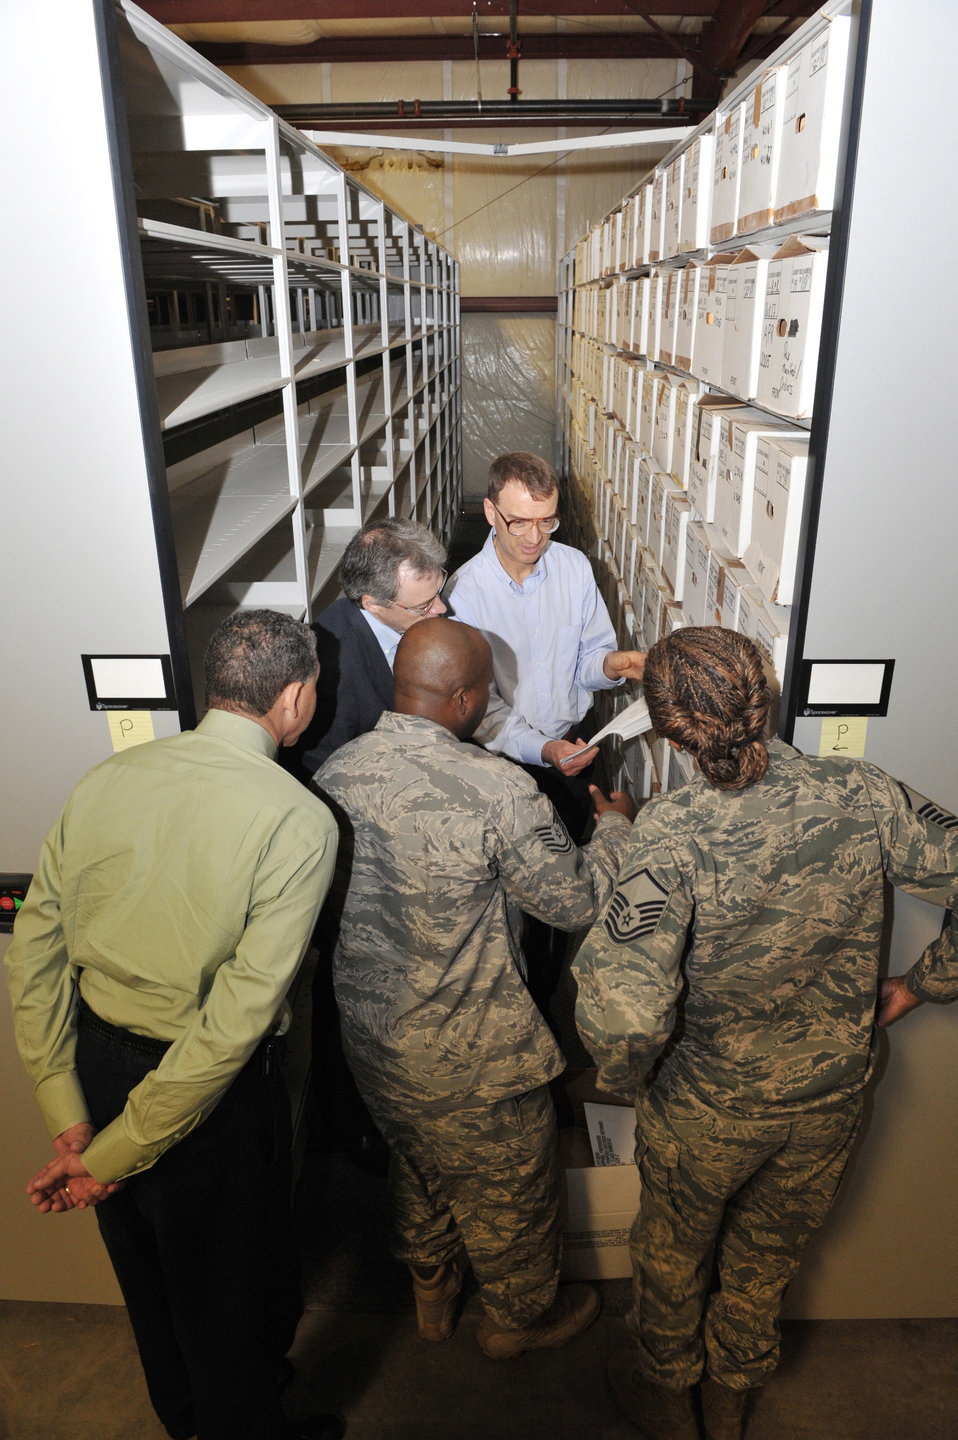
'One of a kind' war records staging facility gets Air Force, national review

Air Combat Command records management and National Archives and Records Administration representatives review Air Force war records with U.S. Air Forces Central Command Records Management Office members during a visit to a recently renovated war records facility July 1 at Shaw Air Force Base, S. C.